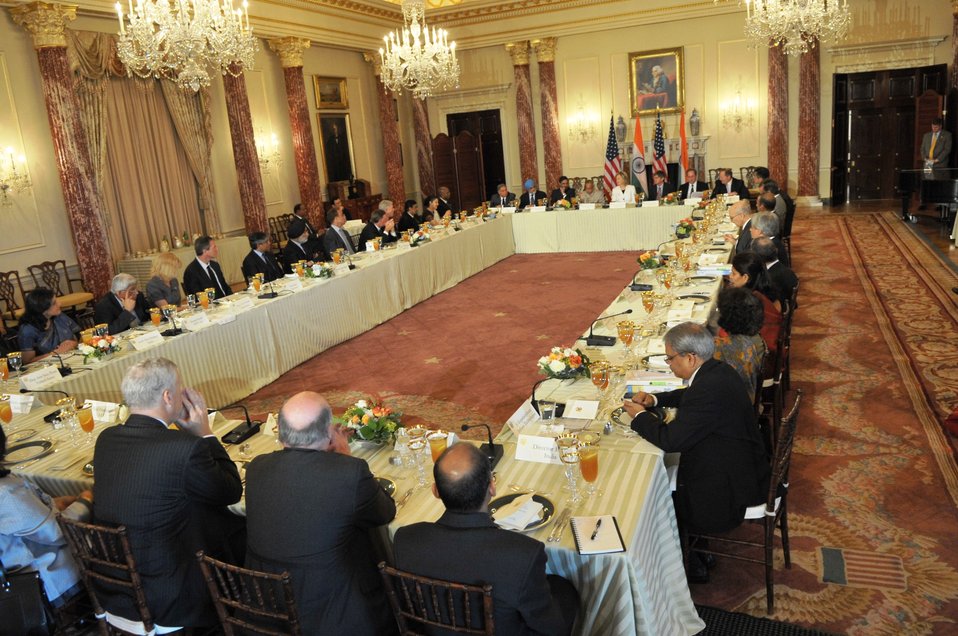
Secretary Clinton Attends U.S.-India CEO Luncheon

U.S. Secretary of State Hillary Rodham Clinton delivers attends a luncheon co-hosted by U.S. Deputy Secretary Jim Steinberg and U.S. Under Secretary for Economic, Energy and Agricultural Affairs Robert Hormats for the U.S.-India CEO Forum at the U.S. Department of State in Washington, D.C., on June 22, 2010.